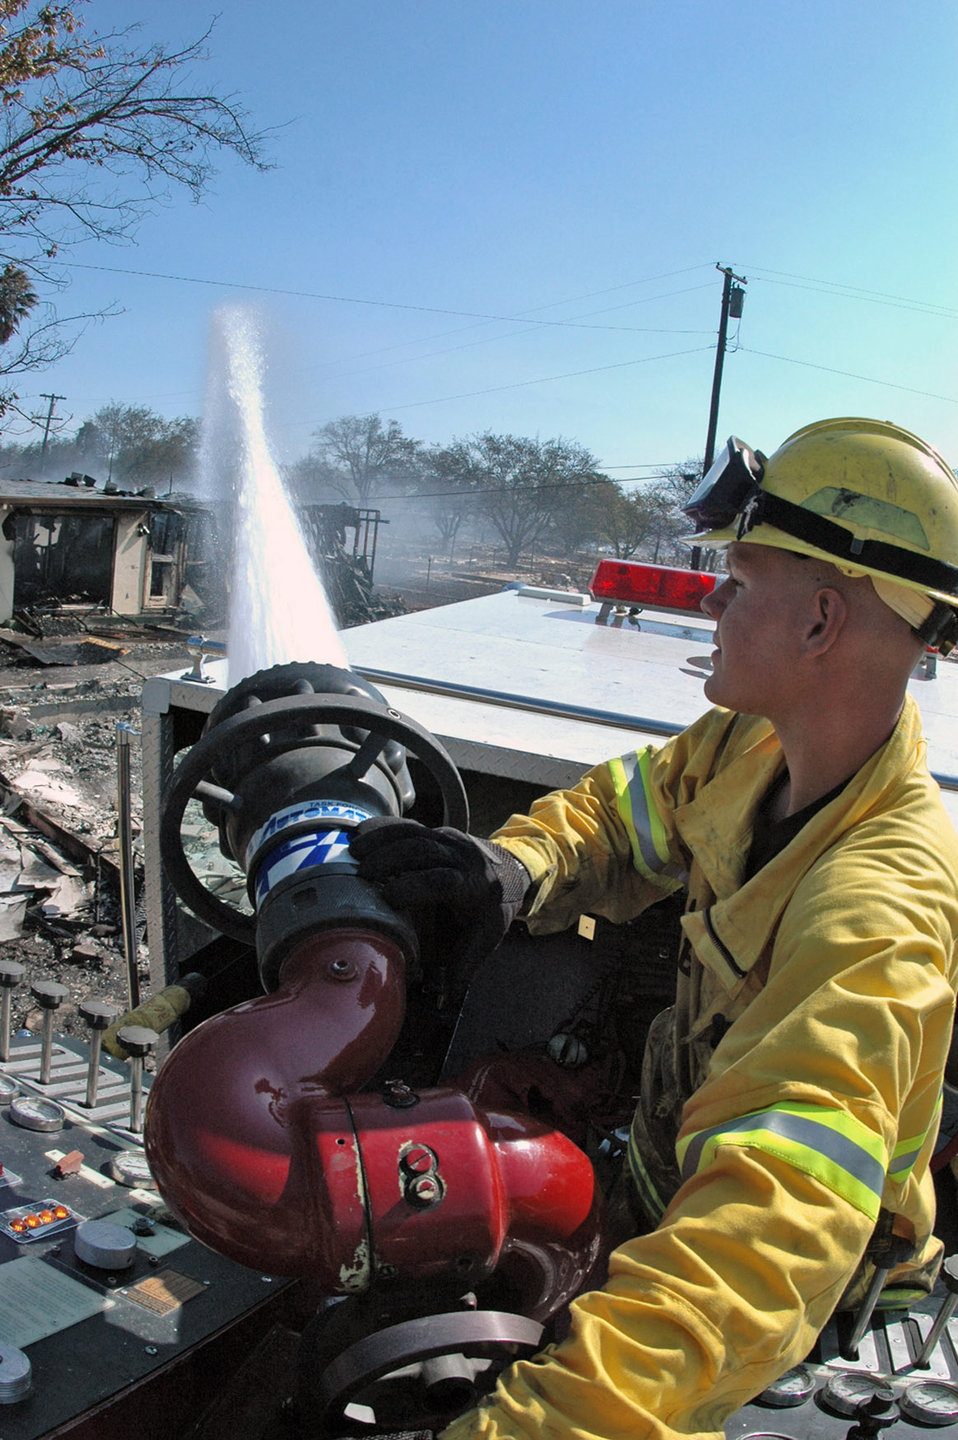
Knocking it out

Airman 1st Class Matthew Johnston uses a P-24 engine mass deck gun to knock down flames on an unoccupied house destroyed by an eight-alarm fire Aug. 16 at Travis Air Force Base, Calif. Heavy winds caused the fire, which originated outside the base. Airman Johnston is a Travis AFB firefighter.